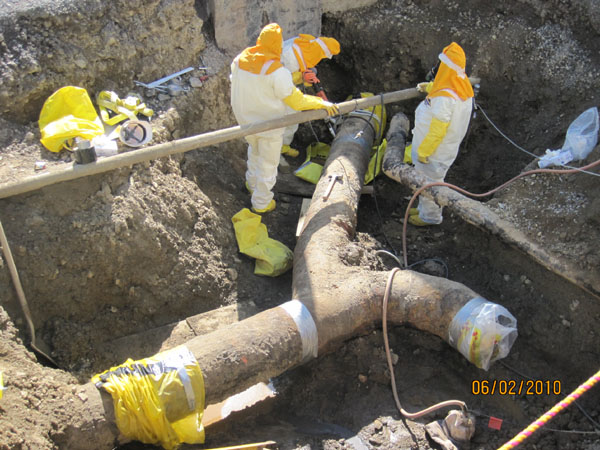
Recovery Act Funds New Equipment to Keep Waste Tanks Dry

With funding from the Recovery Act, workers at the West Valley Demonstration Project (WVDP) are installing a tank and vault drying system to evaporate the remaining liquids in the tanks and vaults, and maintain a low relative humidity to limit tank corrosion.

With an operational design life of 30 years, this system will provide needed time for WVDP officials to make and implement long-term decisions about the decommissioning of the Waste Tank Farm.